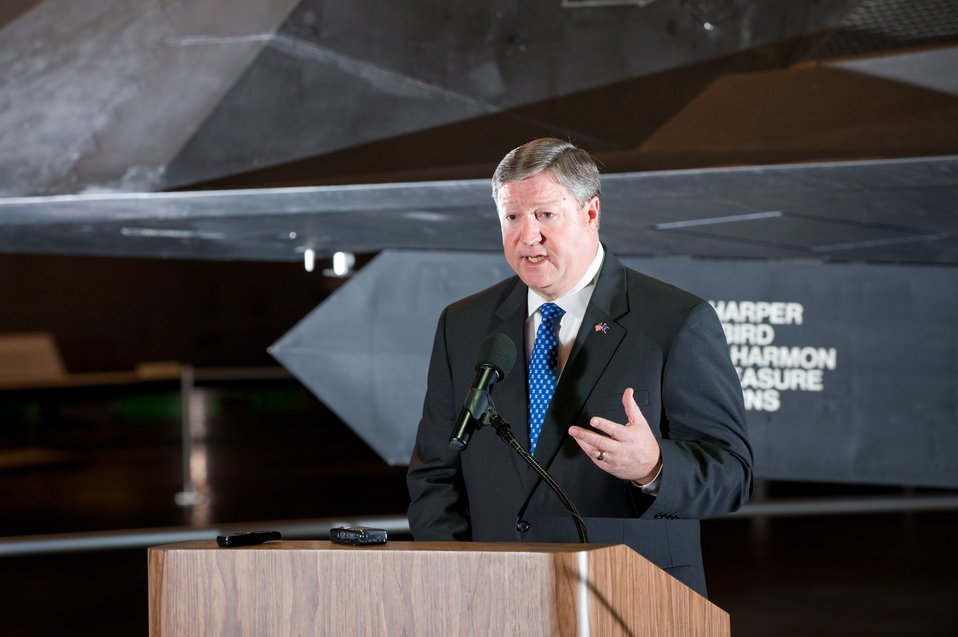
Secretary of the Air Force comments on Doolittle Tokyo Raiders reunion

Secretary of the Air Force Michael B. Donley, shared his thoughts and took questions on the 68th reunion of the Doolittle Tokyo Raiders, and discussed how their stories continue to inspire those serving in the Air Force today. He is in front of a F-117 Stealth Fighter on display at the National Museum of the U.S. Air Force on April 16, 2010.